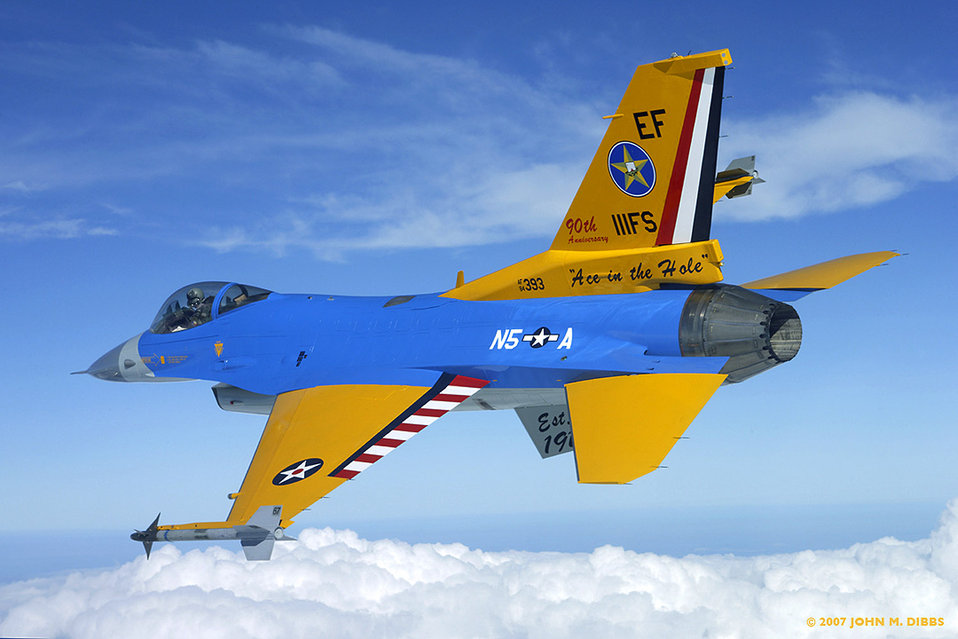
Colorful F-16 represents 90 years of history

An F-16C Fighting Falcon from the Texas Air National Guard's 111th Fighter Squadron flies with a special paint job in honor of the squadron?s 90th anniversary. All the colors and markings have specific meanings, reflecting the unit?s nine-decade history.